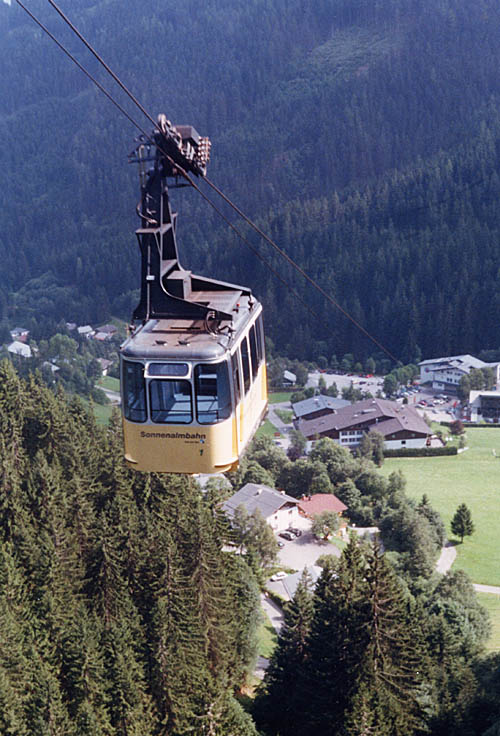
The Sonnenalmbahn cable car at Zell am See in the Austrian Alps. Photographed by Adrian Pingstone in 1998 and released to the public domain. Fran√ßais†: T√©l√©ph√©rique